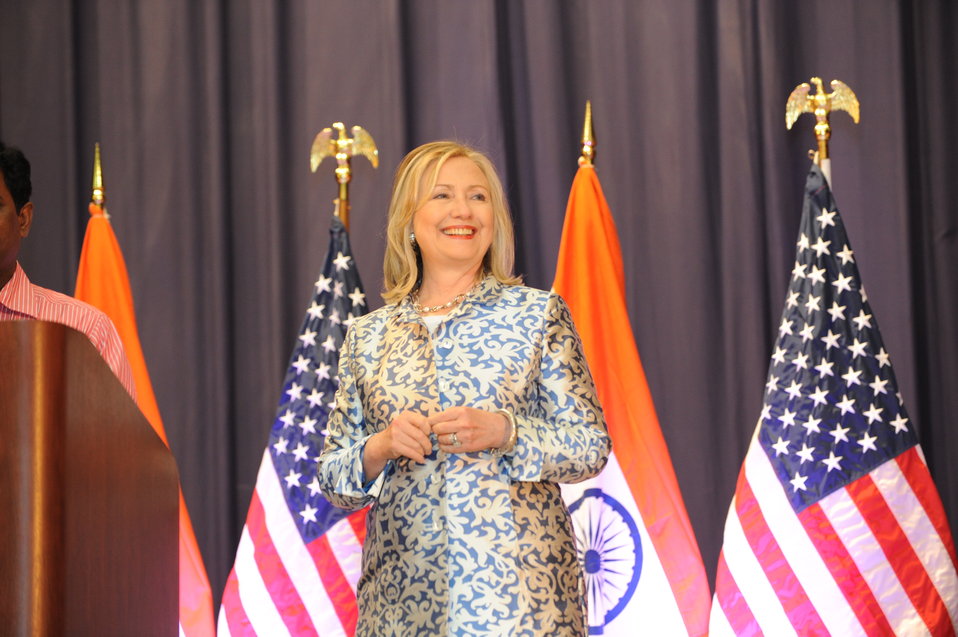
Secretary Clinton Takes the Stage To Deliver Remarks on “India and the United States: A Vision for the 21st Century”

U.S. Secretary of State Hillary Rodham Clinton takes the stage to deliver remarks on “India and the United States: A Vision for the 21st Century,” at Anna Centenary Library in Chennai, India, on July 20, 2011. [Paul Cohn/ State Department photo]